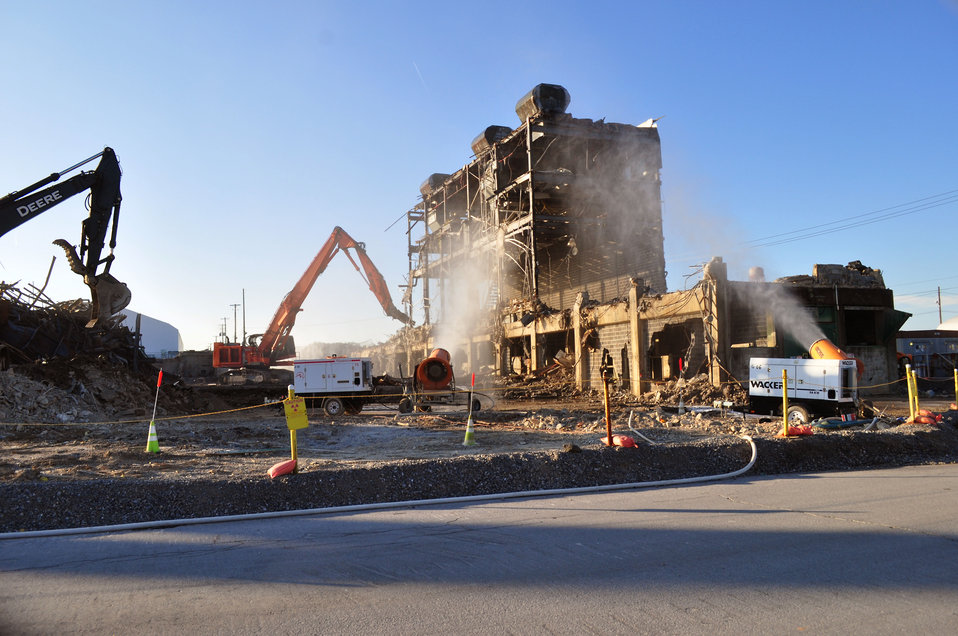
DandD of K-25 North Tower

13-005 DOE photo Lynn Freeny 1-23-2013 ETTP North Tower K-25 Oak Ridge Tennessee